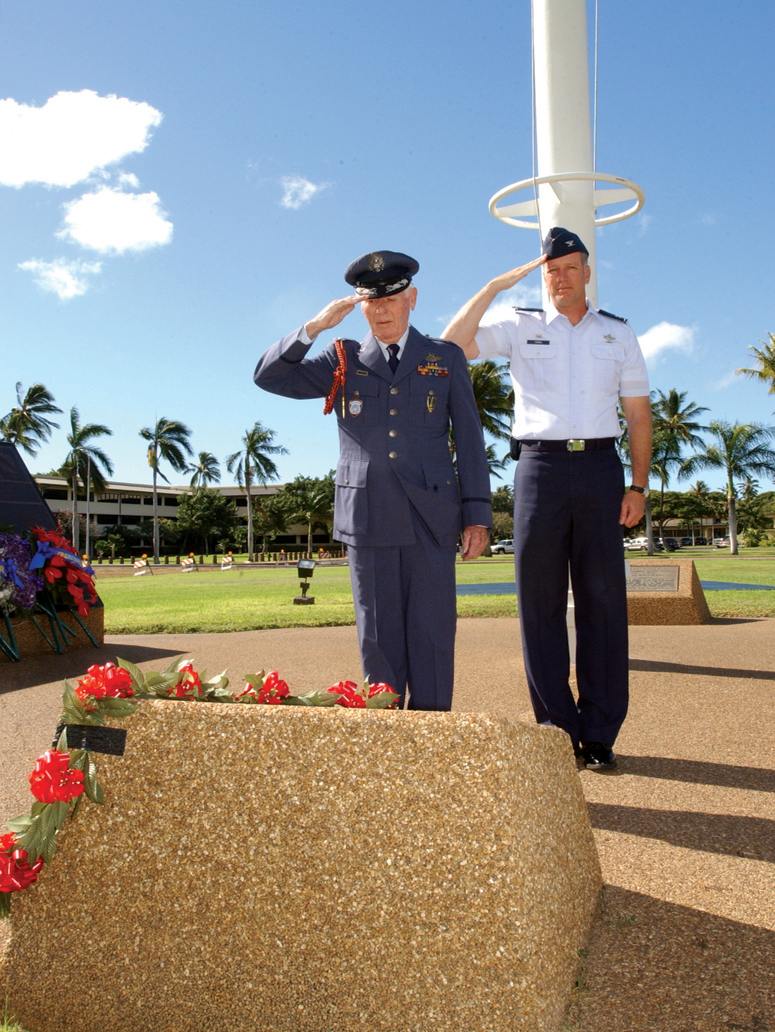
Paying tribute

HICKAM AIR FORCE BASE, Hawaii -- Retired Col. Leslie Bratton (left) and Col. Ray Torres pay tribute during a ceremony commemorating the 63rd anniversary of the attack on Hickam Field on Dec. 7, 1941. Colonel Bratton was a B-17 Flying Fortress pilot from the 31st Bombardment Squadron who participated in the response to the attack. Colonel Torres is the 15th Airlift Wing commander.